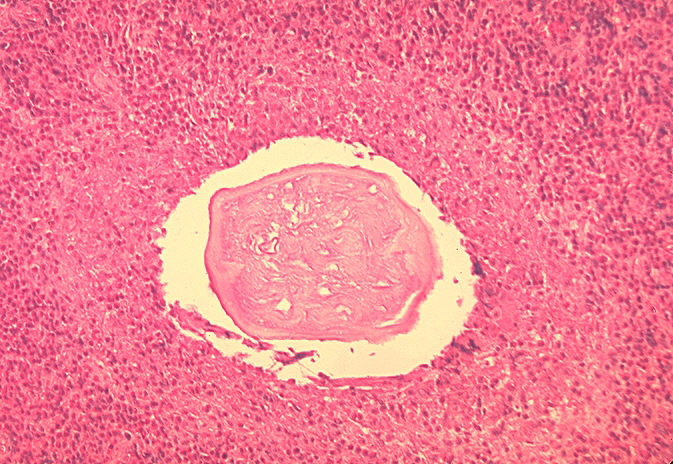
Histopathology showing cross section of Dirofilaria worm in eye.